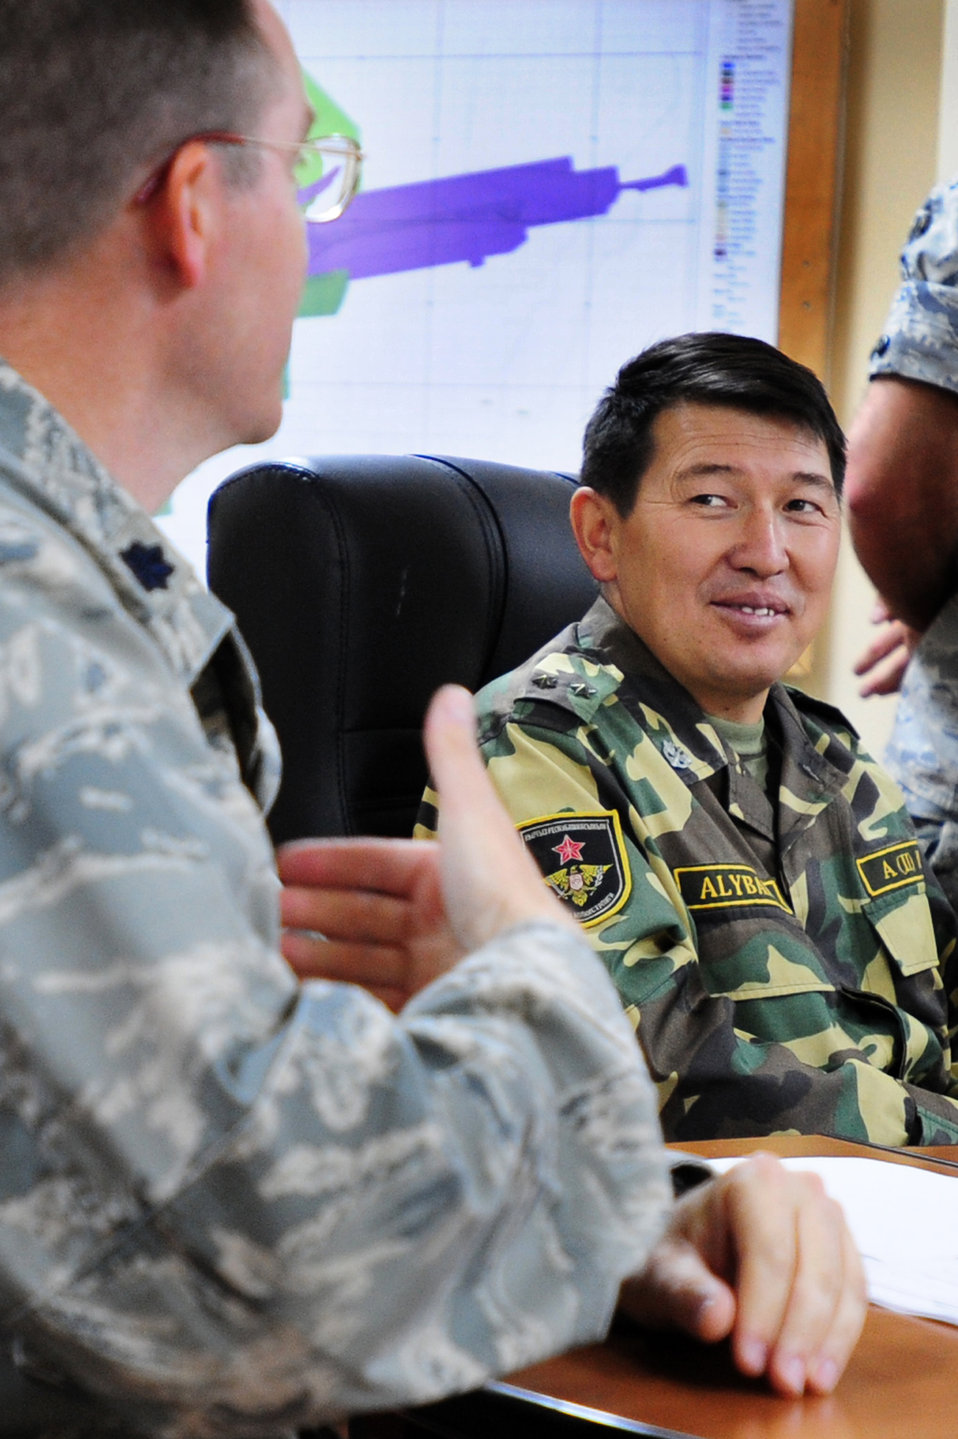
Kyrgyz ministry of defense team shadows Airmen, learns expeditionary maintenance

Lt. Col. Bradley Allen briefs Kyrgyz Lt. Col. Mirlan Alybayev Aug. 25, 2009 during a visit to the Transit Center at Manas, Kyrgyzstan. The Kyrgyz ministry of defense got a firsthand look at maintenance facilities and a KC-135 Stratotanker while touring the Transit Center. Colonel Allen is the 376th Expeditionary Maintenance Group commander. Colonel Alybayev is a Kyrgyzstan ministry of defense liaison officer.